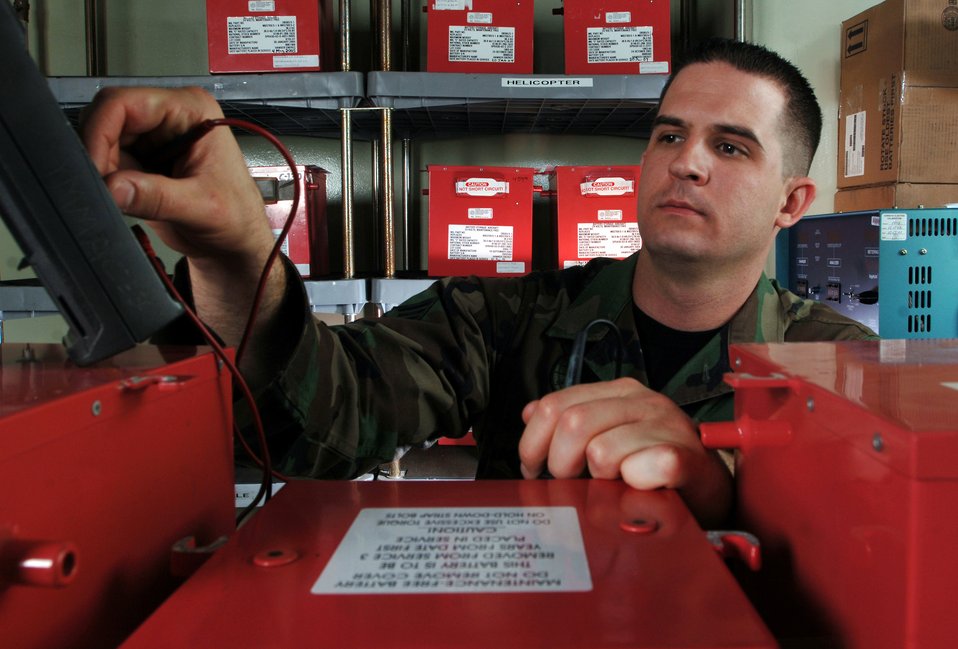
Voltage check

Senior Airman Josh Paul uses a multimeter to check the voltage of lead acid batteries during periodic inspection at a facility Thursday, March 23, 2006, at Yokota Air Base, Japan. The batteries are used to provide power to C-130 Hercules aircraft and UH-1 Huey helicopters here. Airman Paul is an electro and environmental technician with the 374th Maintenance Squadron.